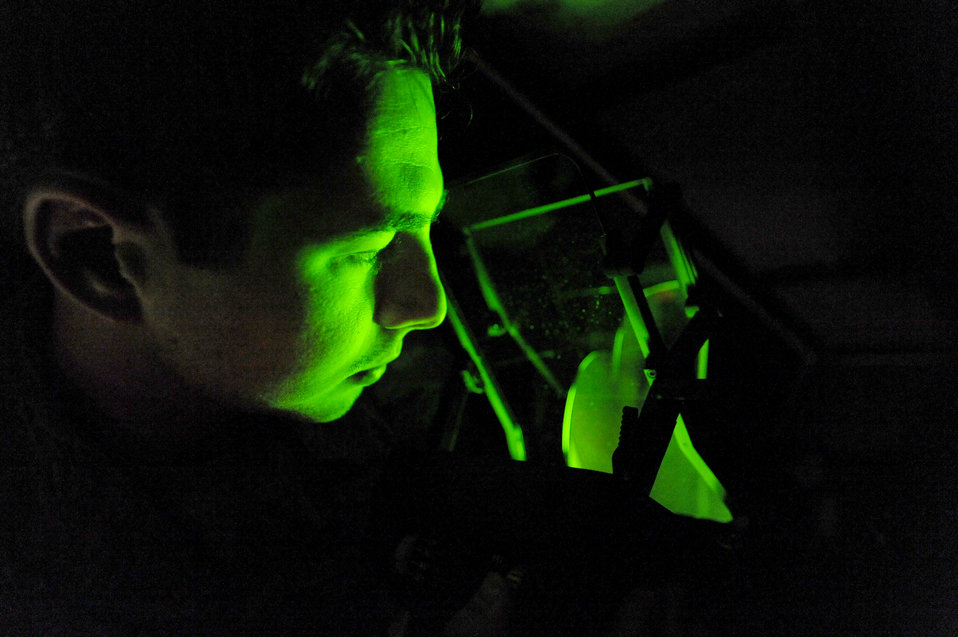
Avionics of Excellence

Senior Airman Keiron Legg checks the night mode on a C-17 Globemaster III heads-up display unit May 25, 2010, at Joint Base Charleston, S.C. Airman Legg is a test station and components journeyman with the 437th Maintenance Squadron.